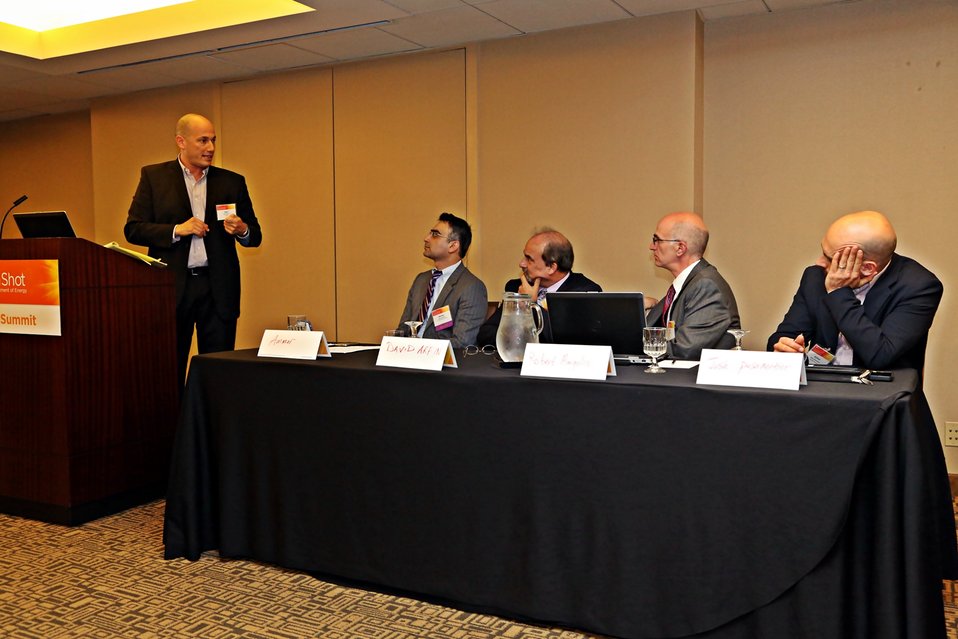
Breakout Sessions 6